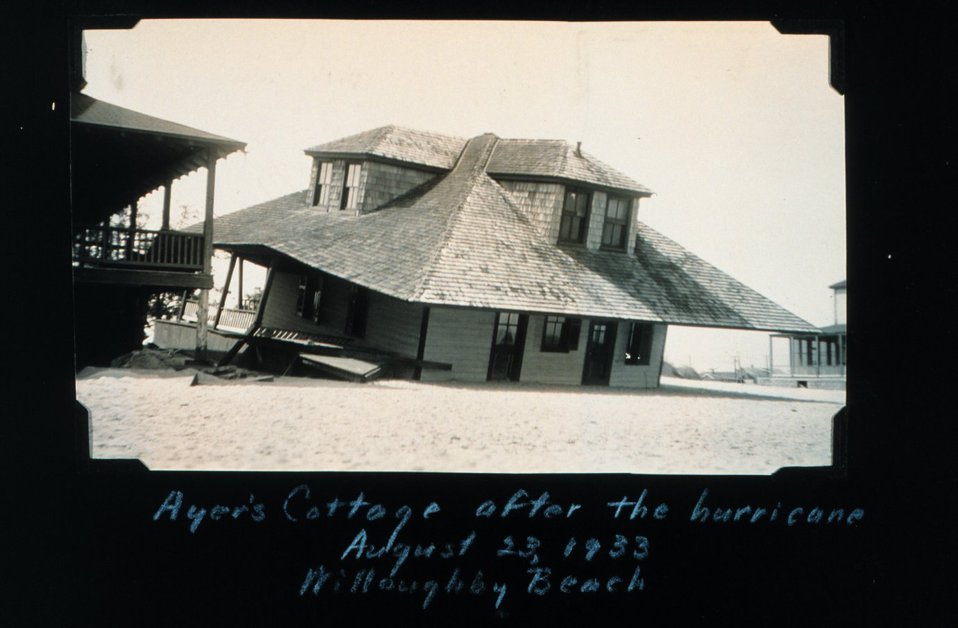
'Ayer's Cottage' after the hurricane.